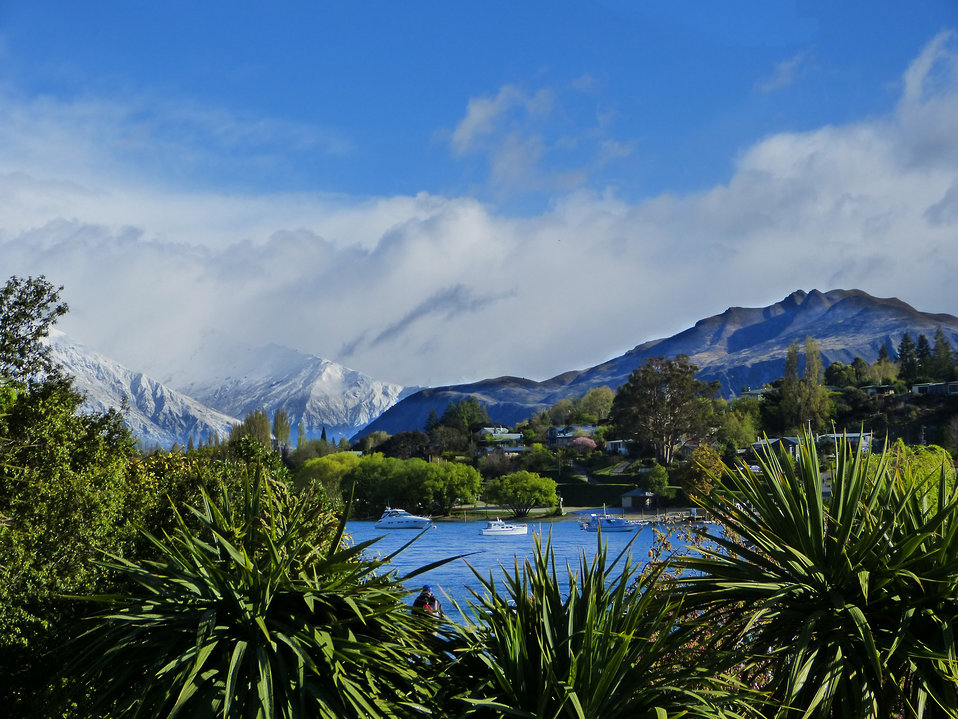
Lake wanaka, otago.